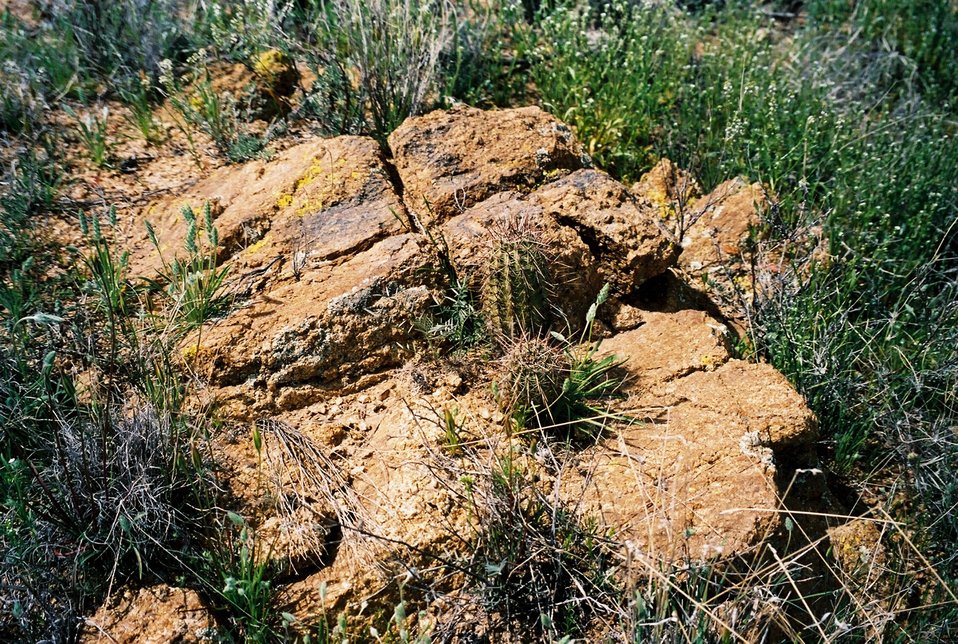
Agua Fria National Monument area.